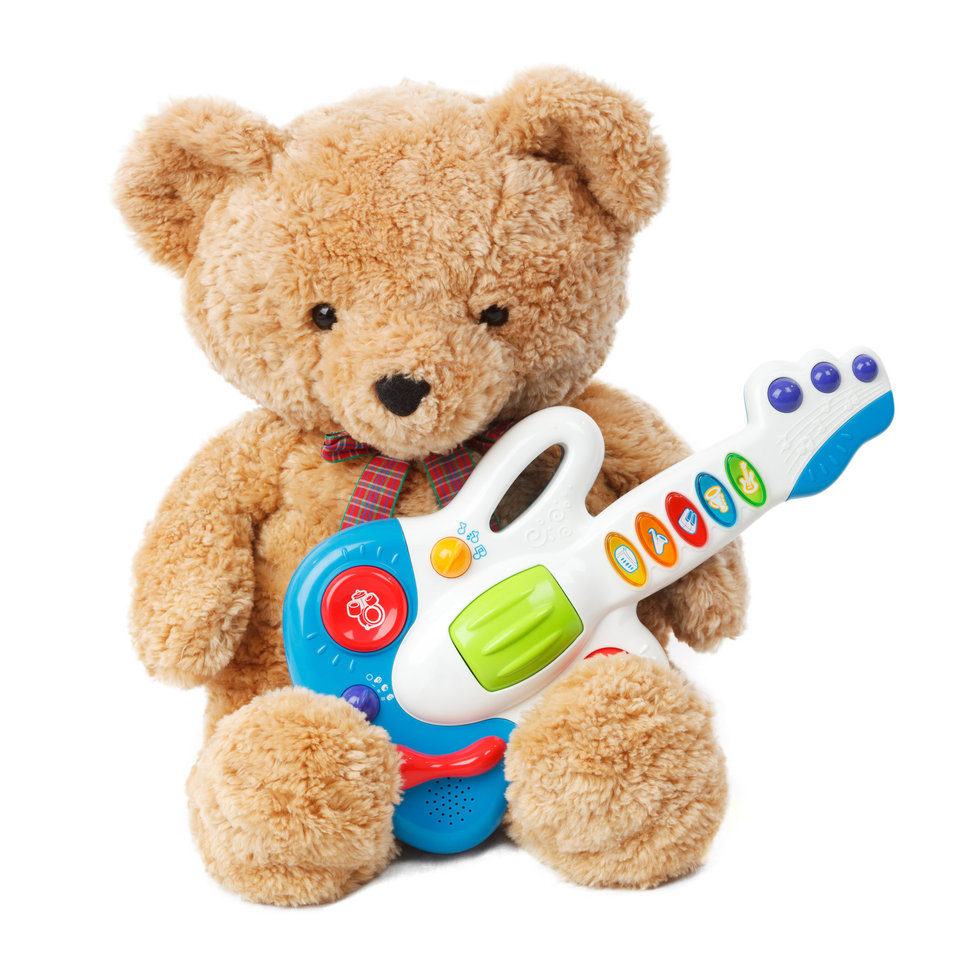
Teddy bear with a guitar isolated on white background.